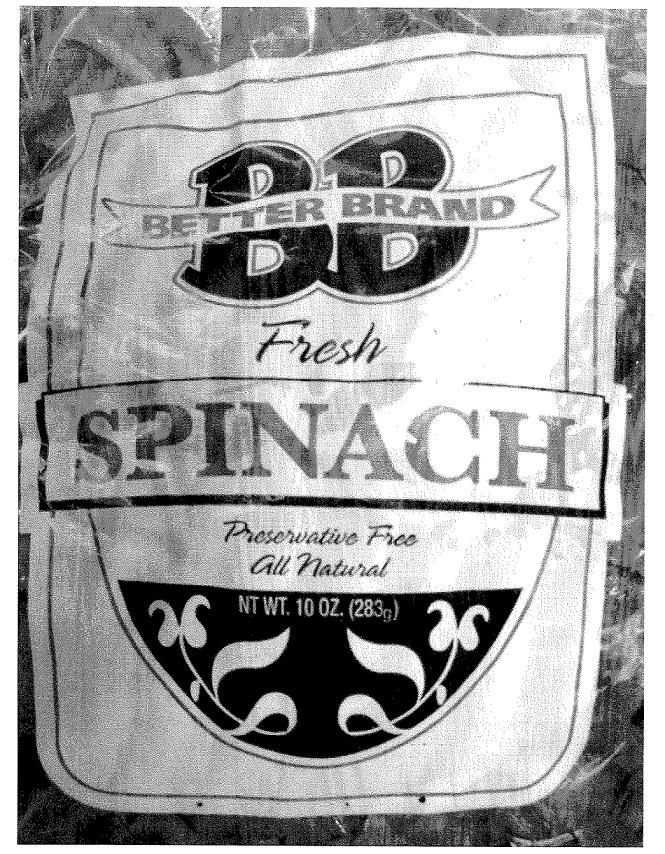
RECALLED - Fresh Spinach

December 23, 2011 - SAvon Heights Mushrooms, Inc. Recalls Fresh Spinach Because of Possible Health Risk For additional information, please refer to the company issued press release available on FDA's web site at www.fda.gov/Safety/Recalls/UCM285071